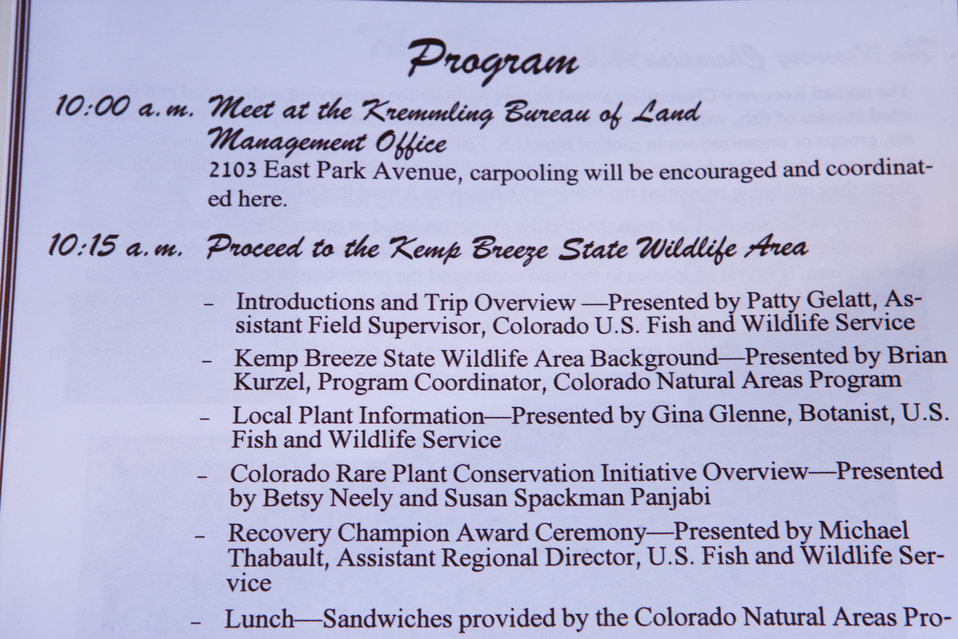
Colorado Rare Plant Conservation Initiative

The Colorado Rare Plant Conservation Initiative (RPCI) is a partnership of 23 statewide and regional agencies, private organizations, and academic institutions working to conserve 121 rare plants in Colorado. As part of these efforts the group developed the Colorado Rare Plant Conservation Strategy, developed Best Management Practices to reduce energy development impacts, addressed climate change, and developed focused strategies for the conservation of individual species at eight priority landscapes. The group has also worked to coordinate volunteer efforts for plant conservation across the state.